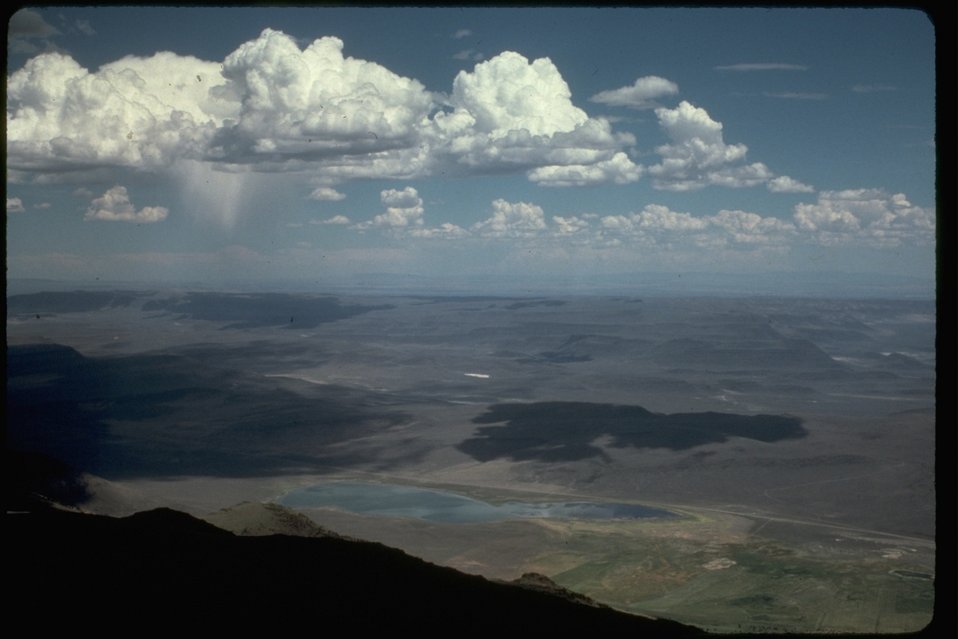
Aerial view of Sheepshead Mountain. OR 2-72C